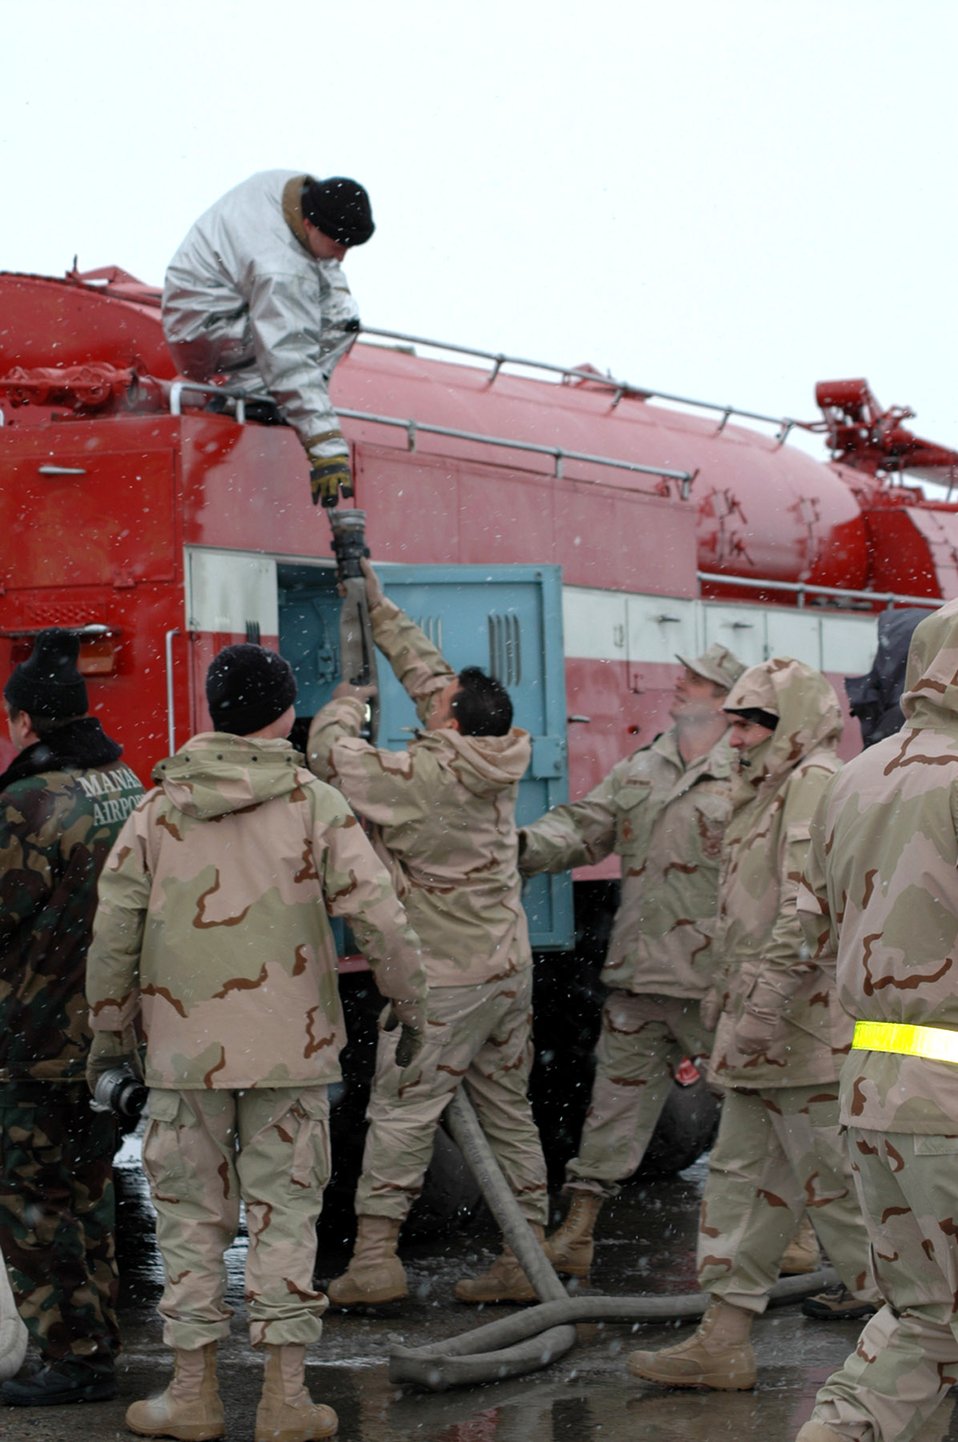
Manas Airmen train with Kyrgyz firefighters

Staff Sgt. Vincent Anselmo hands a fire hose to Stas Suleymanov Feb. 25 at the Manas International Airport in Kyrgyzstan. In this exercise, the Kyrgyz fire truck received water from the 376th Air Expeditionary Wing coalition fire truck. Sergrant Anselmo is a 376th Air Expeditionary Wing firefighter deployed from the 31st Civil Engineer Squadron Fire Deptartment at Aviano Air Base, Italy. Mr. Suleymanov is a firefighter with the Manas International Airport.